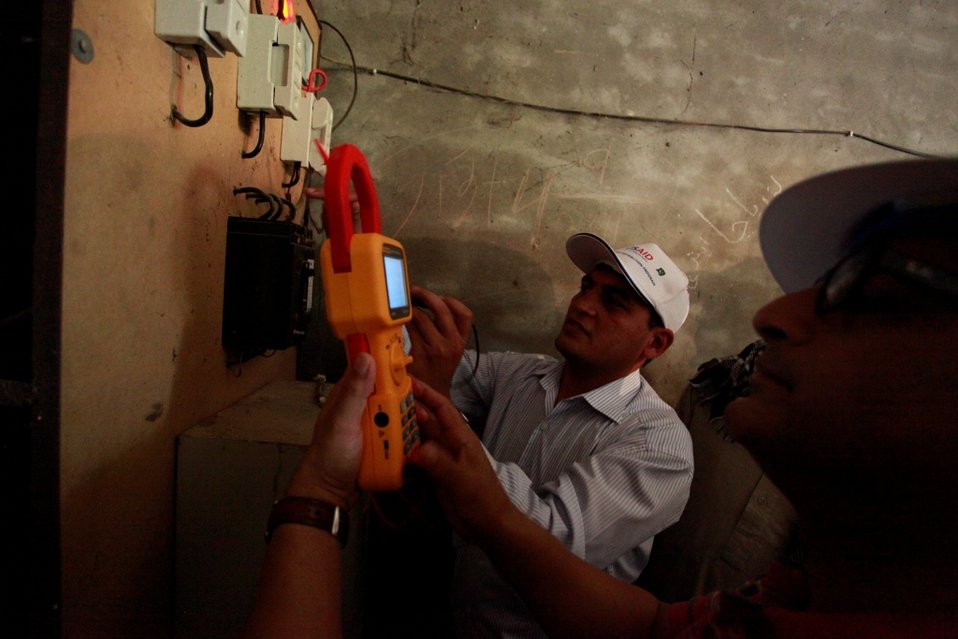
Usaid To Provide Technical Assistance To Improve Efficiency Of Tube-Wells In Iesco By Installing 2600 Lt Capacitors at Islamabad on April 26, 2012